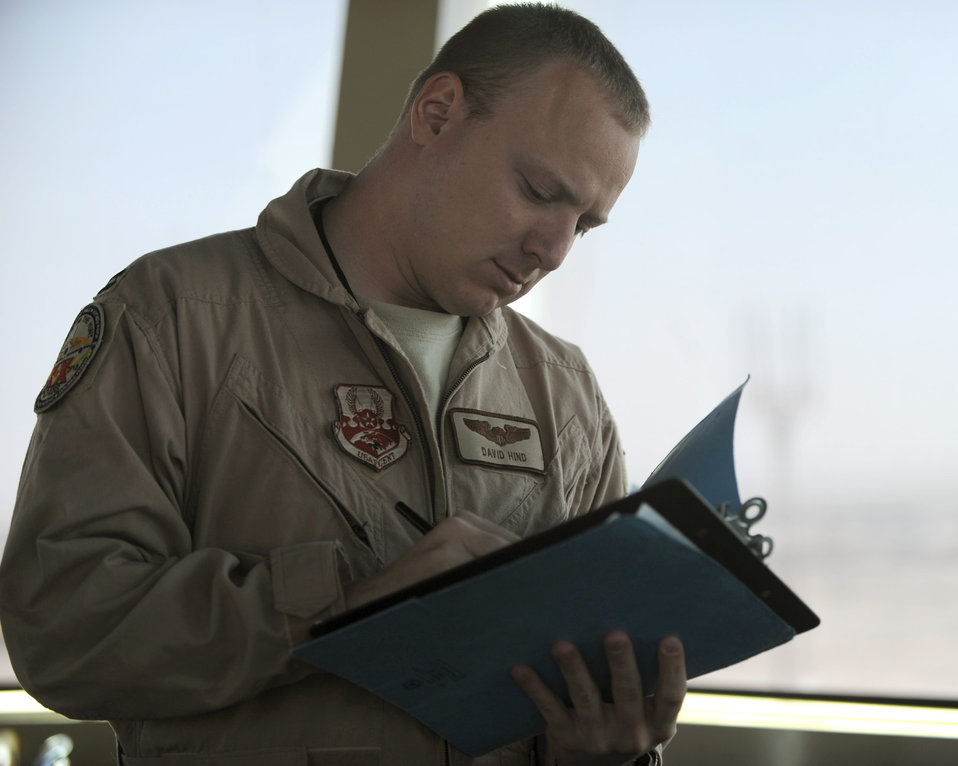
Air traffic controllers ensure safe flow of aircraft

Captain David Hind documents take off times Oct. 18, 2010, at an undisclosed location in Southwest Asia. Captain Hind is a pilot with the 763rd Expeditionary Reconnaissance Squadron and is deployed from Offut AFB, Neb.